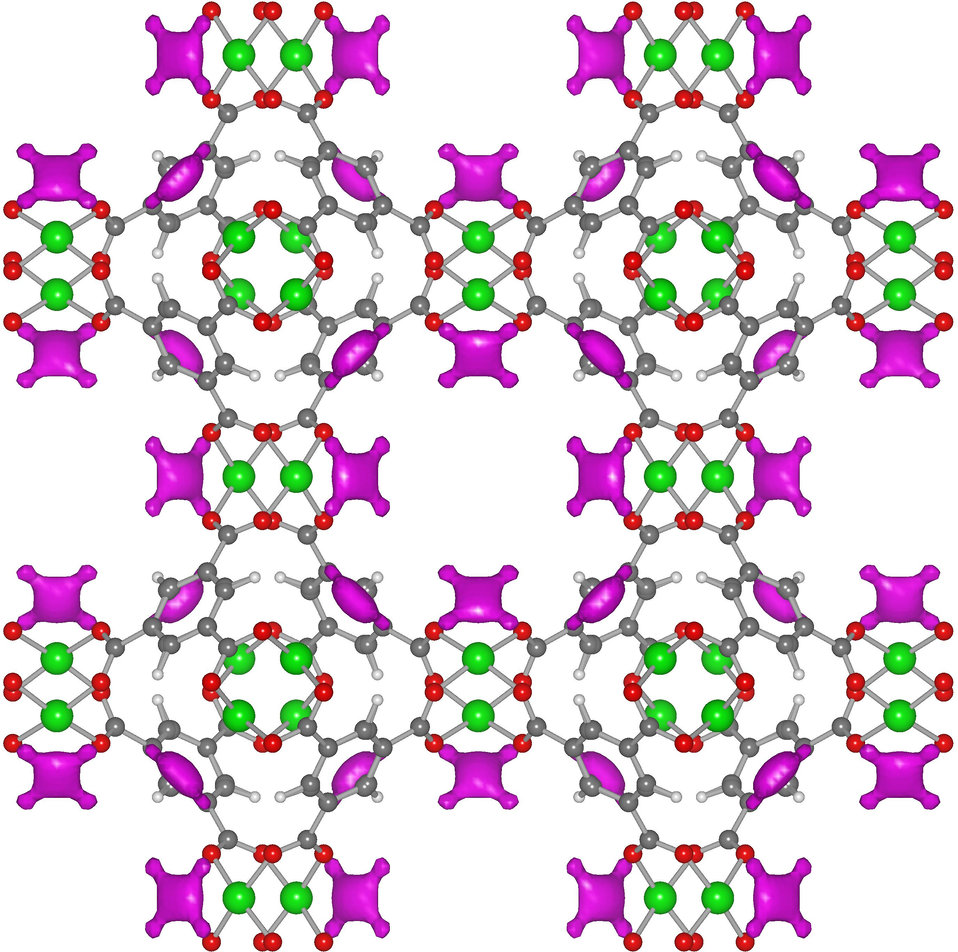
MOF

This closeup image of the HKUST-1 metal-organic framework (MOF), recently obtained by NIST scientists, reveals that copper atoms (green) are exposed to the open air within the MOF’s lattice-like structure. The exposed copper allows the MOF to safely store acetylene (magenta) up to 100 times more densely than current methods.